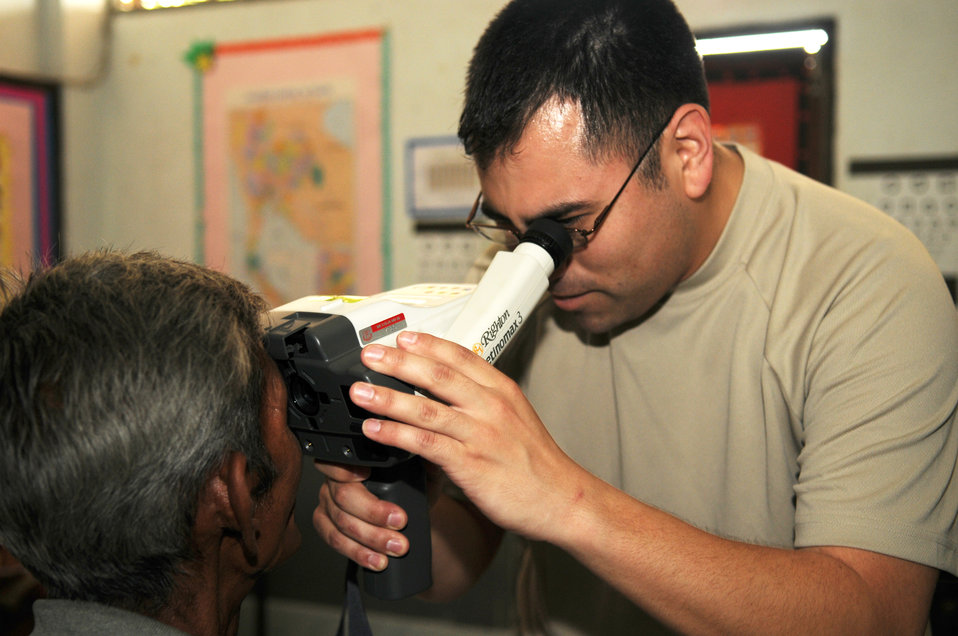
PACAF provides much needed dental and ophthalmologic care to underprivileged in Thailand.

Staff Sgt. Nemesio Perez checks a patient's eyesight during a joint and multinational humanitarian mission to provide much needed ophthalmologic care to Thailand's underprivileged during Cope Tiger 2009 on March 16. Cope Tiger is an annual exercise held in Thailand to improve combat readiness and combined and joint interoperability of U.S., Thai and Singaporean forces while enhancing regional security and providing humanitarian support. Sergeant Perez is an Ophthalmic Technician from the 36th Aerospace Medical Squadron at Anderson Air Force Base, Guam.